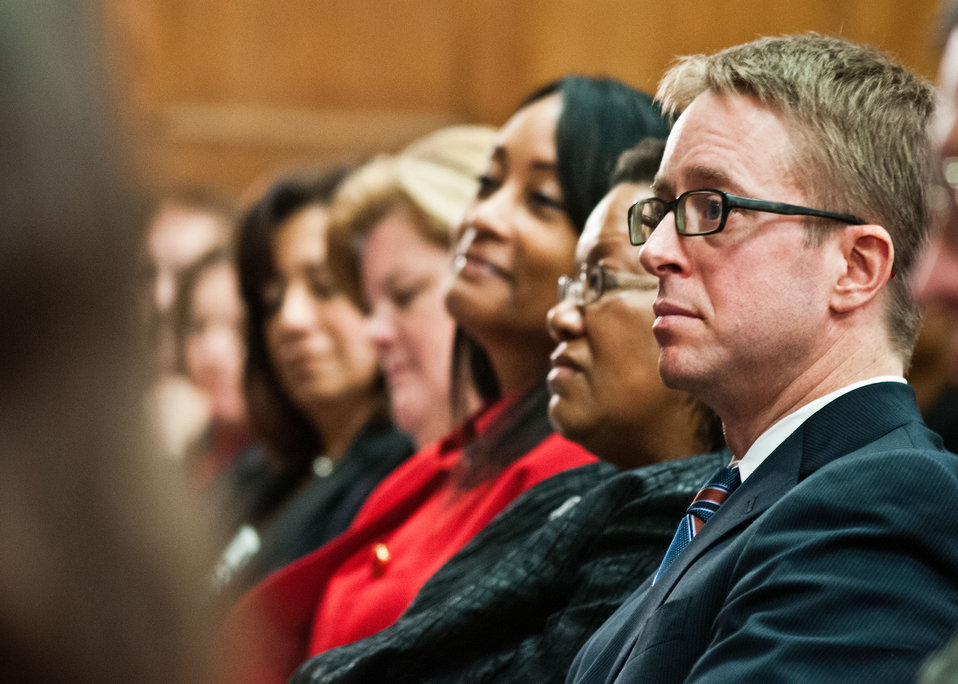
Agriculture Natural Resources Conservation Service (NRCS) Acting Chief Jason Weller waits with other selected employees from the U.S. Department of Agriculture (USDA) Mission Areas to offer USDA Employee Testimonials at USDA’s Fourth Annual Cultural Transformation event held in Washington, D.C. on Tuesday, Dec. 4, 2012. The theme for the event “Faces of Cultural Transformation” Focusing on changing the way we serve our customers and cultural transformation’s benefits to employees.